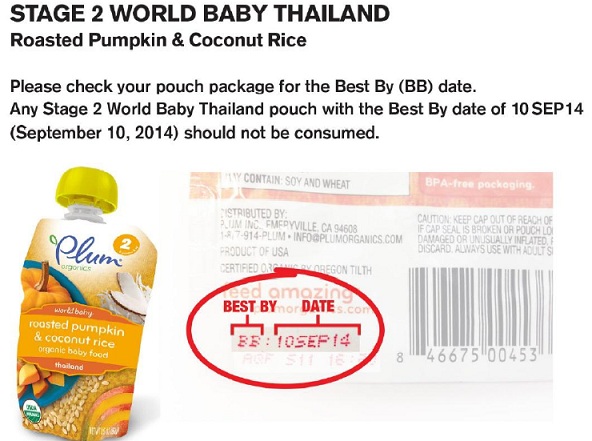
RECALLED – World Baby Italy and World Baby Thailand pouch products

March 4th, 2014 – Product Recall – Plum Organics Voluntarily Recalls Limited Quantity of Two Varieties of World Baby Pouch Products.